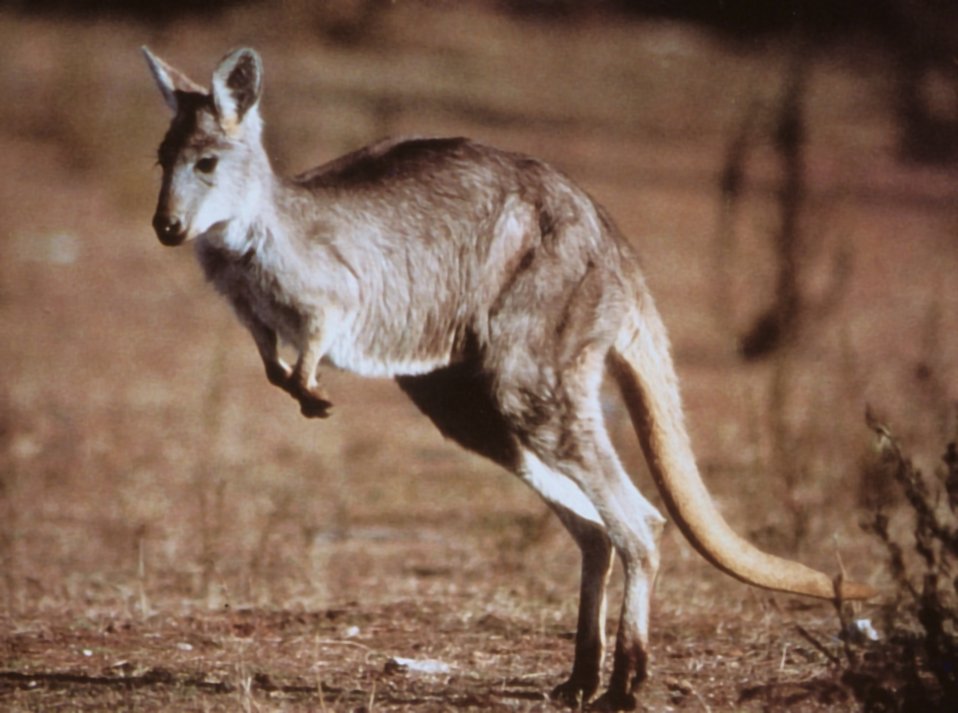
Kangaroo.